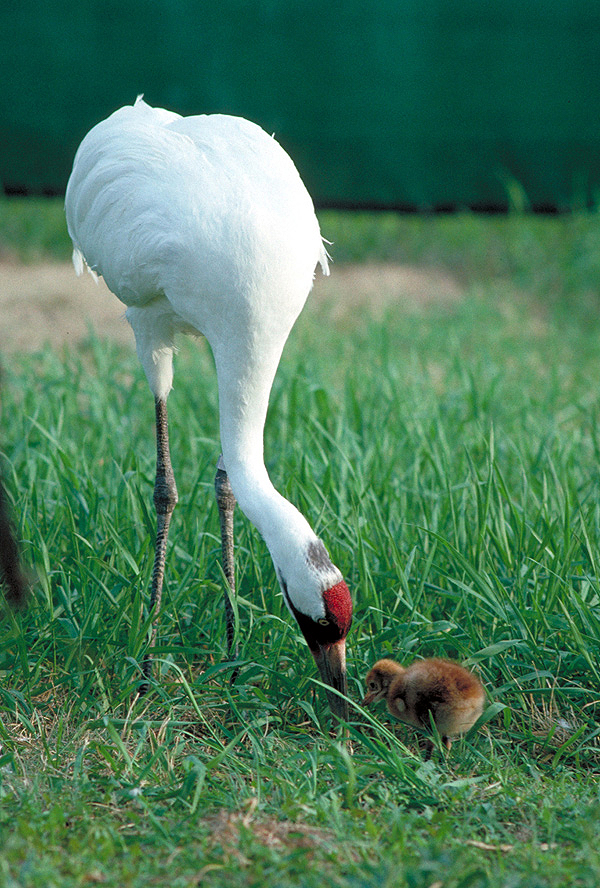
Adult Whooping Crane and Chick

Adult whooping crane (Grus americana) with chick.